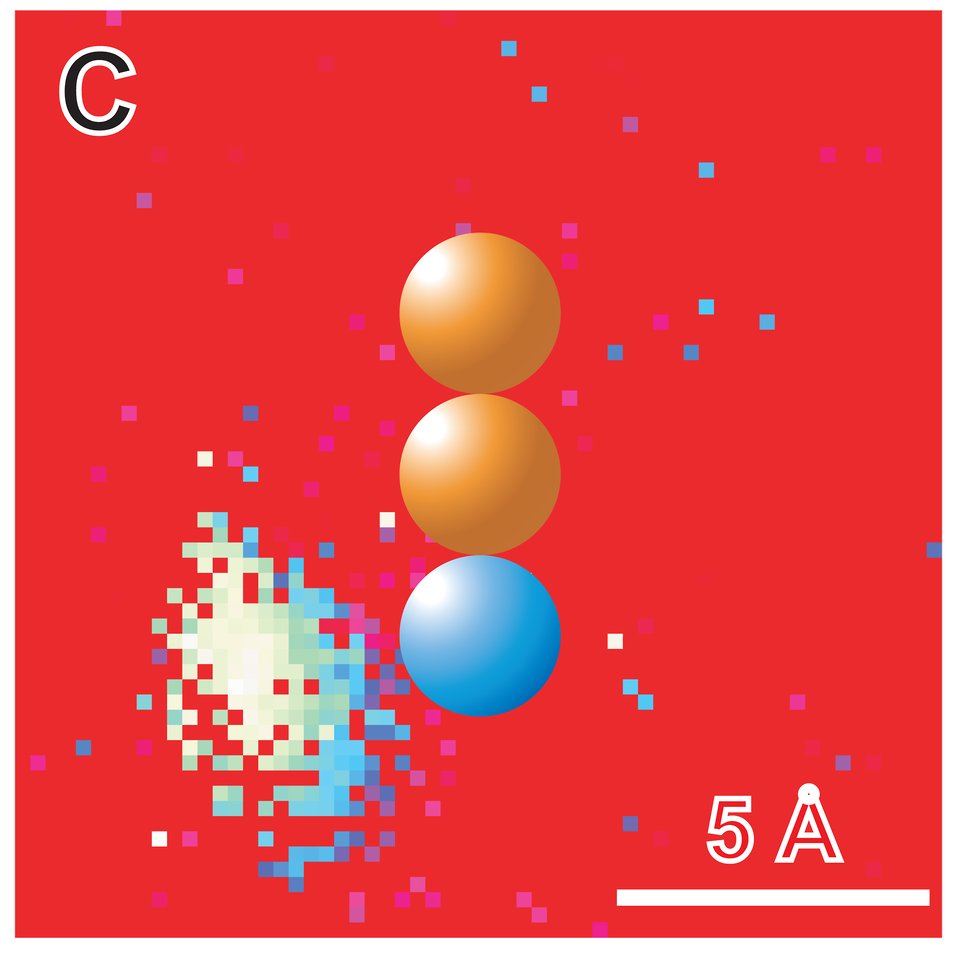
Atomic Switch Figure C

Based on measurements of the 'noise' made by the molecule at each pixel of a topographical image made with the STM, the researchers made a computer-generated spatial map of the atom switching speed and probability, showing that switching is most likely when the STM tip is positioned to the left of the cobalt atom (blue and white speckled area).